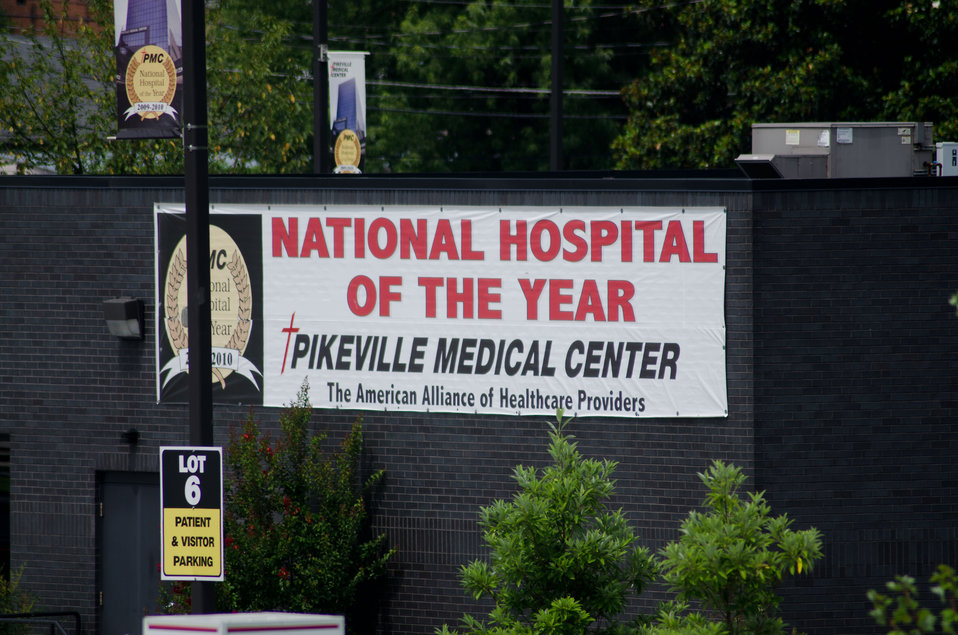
Detour, arrow, construction and temporary signs are posted on and across the re-utilized buildings and properties at various ends of multiple parking lots are common sights at the Pikeville Medical Center on Tuesday, July 12, 2011, in Pikeville, KY. Nearby, the above ground construction phase of Pikeville Medical Center (PMC) expansion project is underway, after months of infrastructure construction and rain delays. This is one of Kentucky’s largest American Recovery and Reinvestment Act (ARRA) projects. The $44.6 million Community Facilities Loan will finance construction of a new medical office building and parking garage.